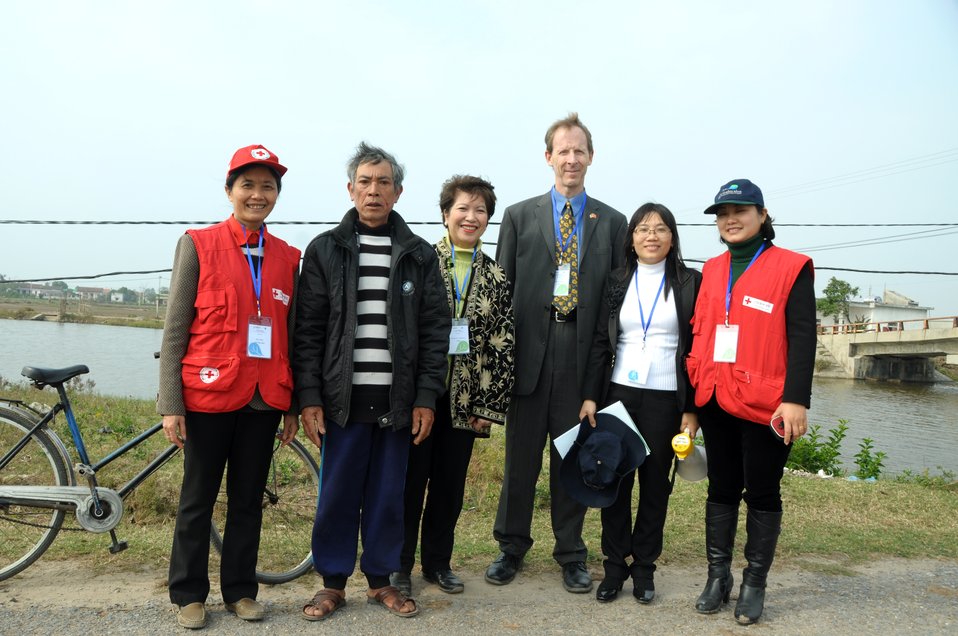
USAID launches the Vietnam Forests and Deltas project in Nam Dinh province.

Quat Lam, Nam Dinh. January 16, 2014.